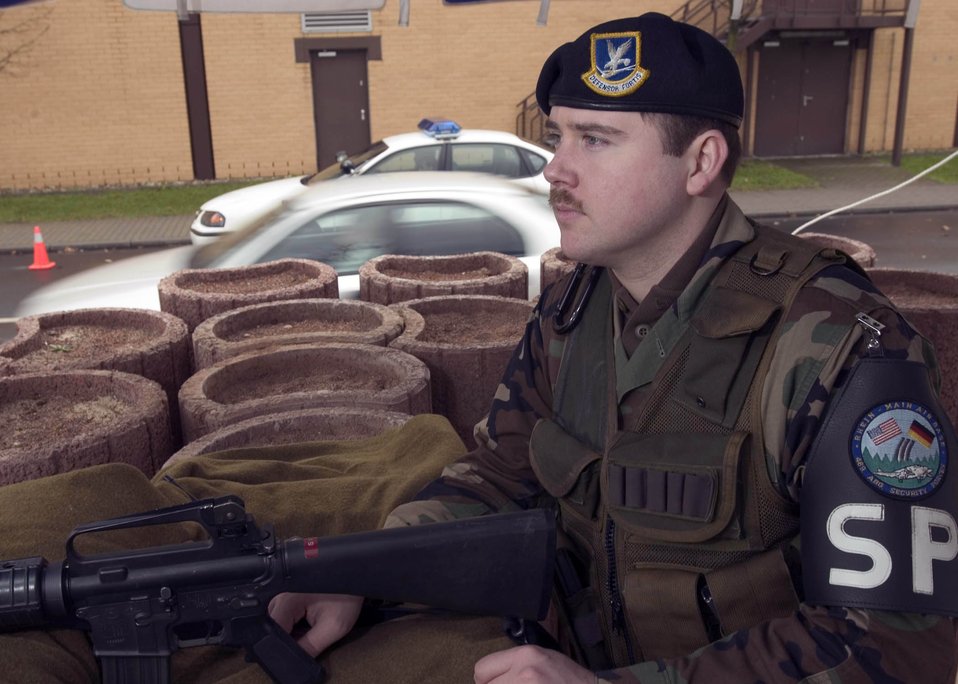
Airmen provide blanket of security

RHEIN-MAIN AIR BASE, Germany -- Staff Sgt. Jeffrey Clairmont provides security here. He and other security forces augmentees are helping the 469th Air Base Group's security forces flight while Operations Enduring and Iraqi Freedom missions are flying from here. The base is scheduled to be officially returned to Germany on Dec. 31. Sergeant Clairmont is from the 435th Security Forces Squadron at nearby Ramstein Air Base.